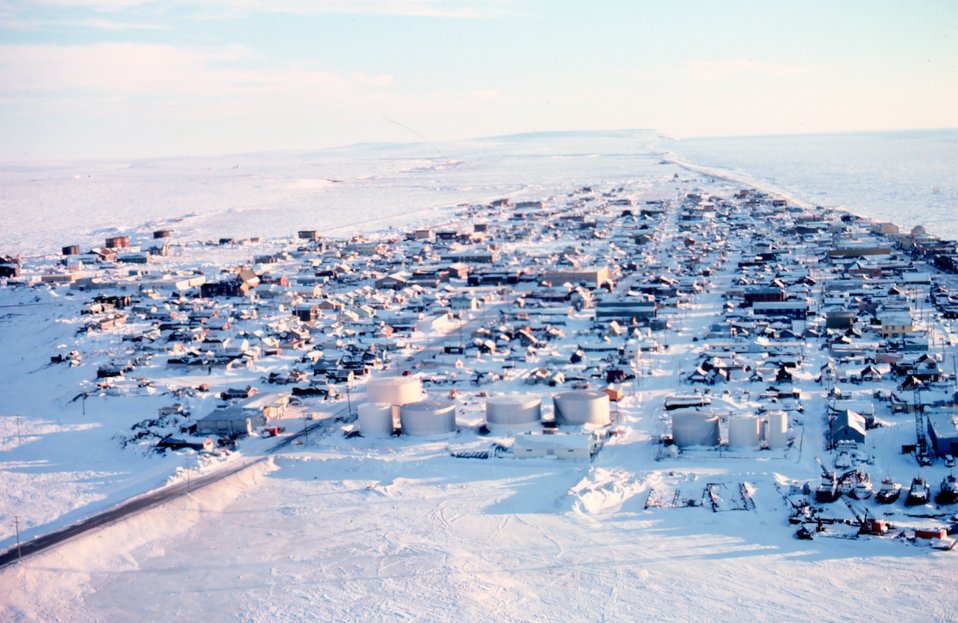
Springtime on Norton Sound.